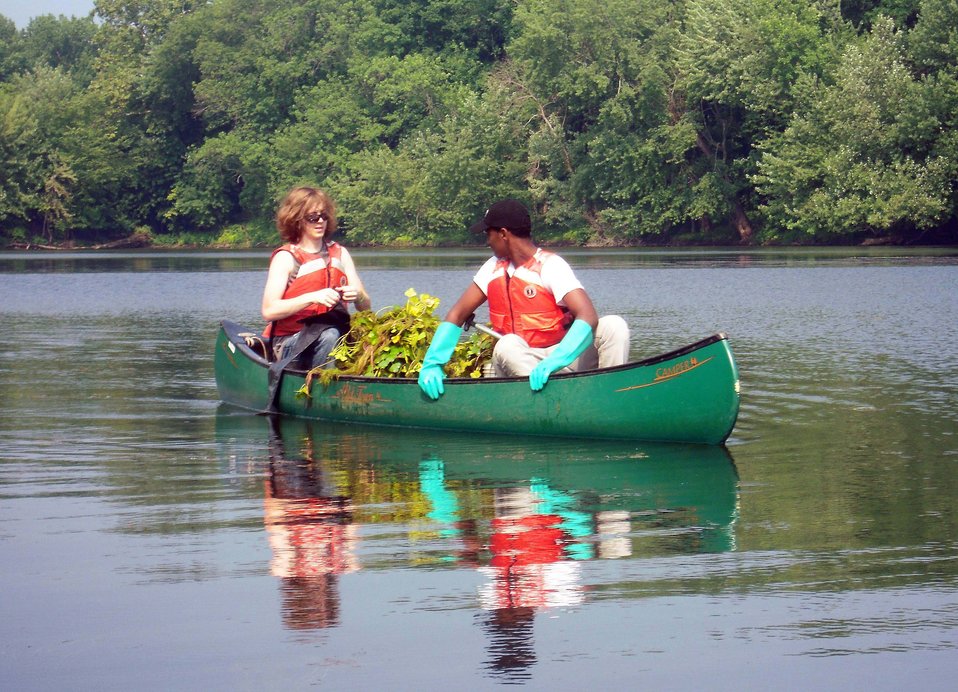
YCC crew removing water chestnut